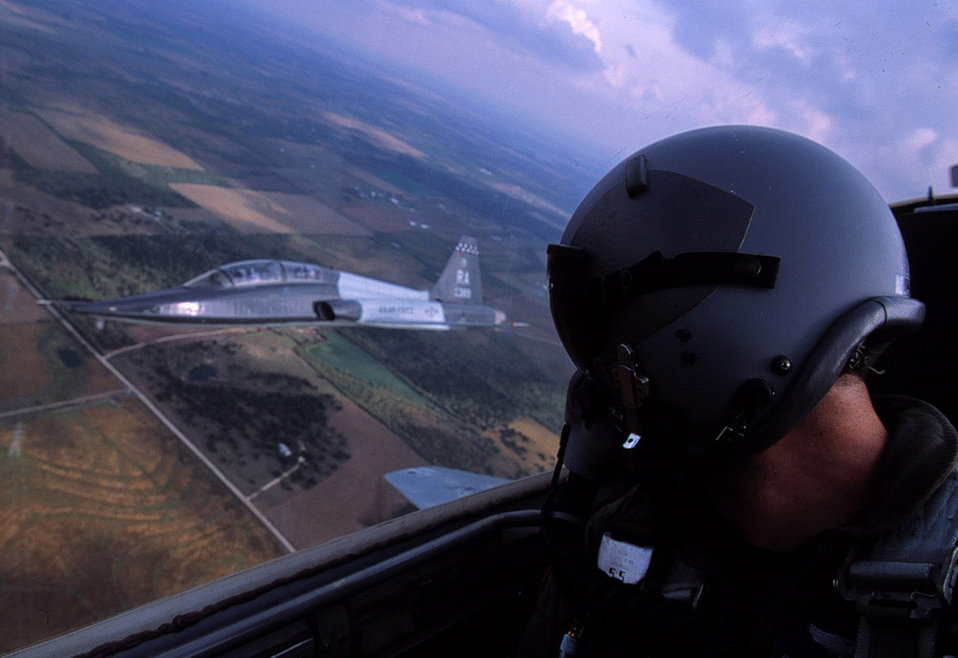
Flight school

RANDOLPH AIR FORCE BASE, Texas -- A T-38A Talon pilot from the 12th Flying Training Wing’s, 560th Flying Training Squadron at Randolph watches from the cockpit as another T-38 flies in formation during a local training mission. The 12th Flying Training Wing is the only unit that teaches Air Force pilots to be flight instructors for Air Education and Training Command’s four undergraduate pilot training bases.